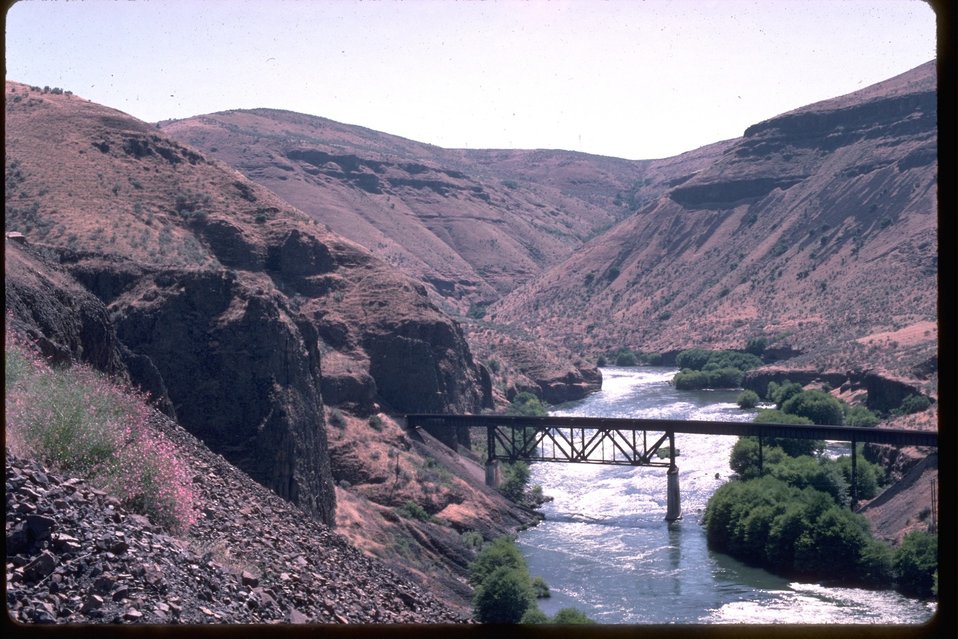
Twin Tunnels Bridge over the Deschutes River.